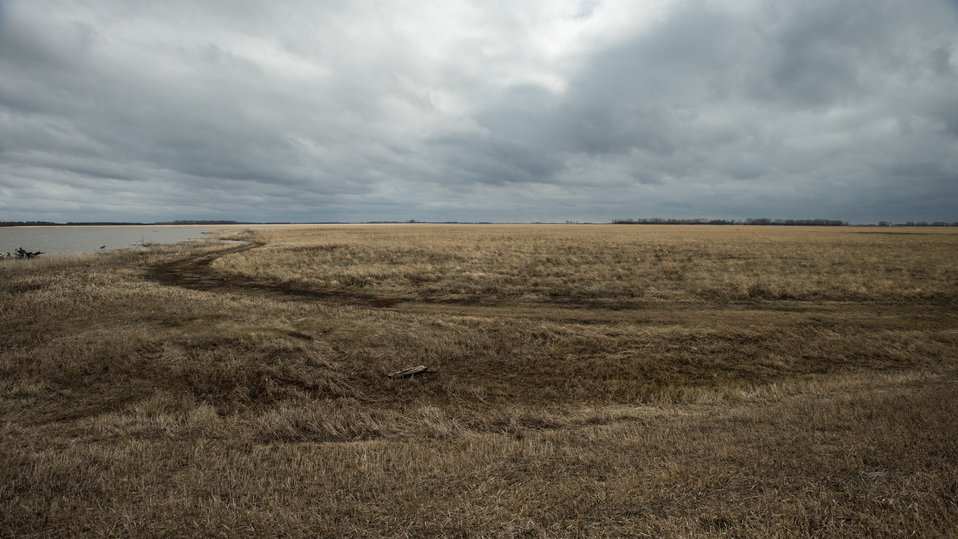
Neil Hanson Emergency Watershed Protection (EWP) Flood Plain Easement located east of Bowesmont, in the Red River basin of ND, Wednesday May 1, 2013. To learn about the Red River Basin Initiative, see www.mn.nrcs.usda.gov/news/features13/RRBI.html.